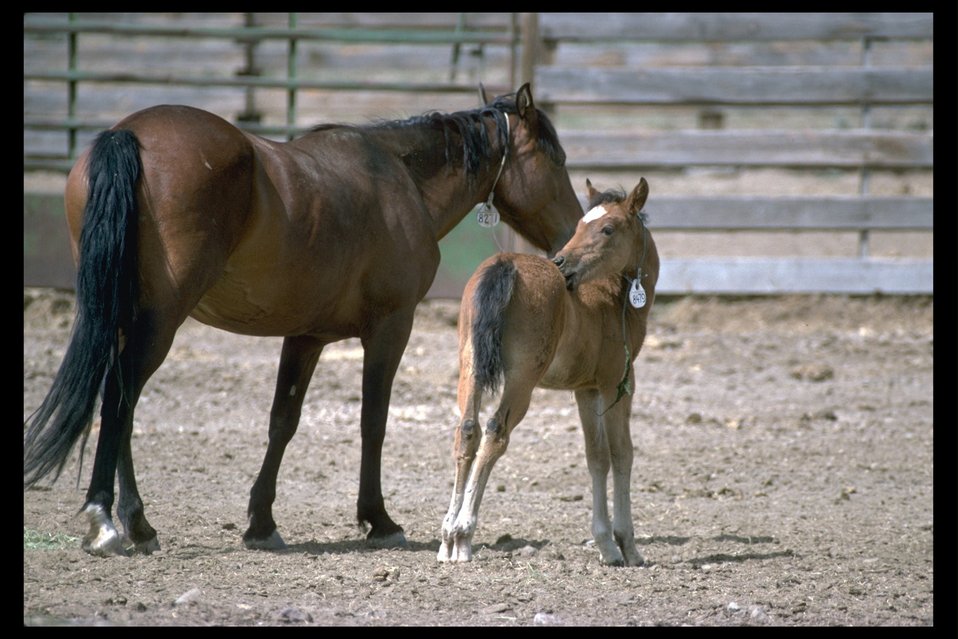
Wild horse pair at Burns Wild Horse Corrals.